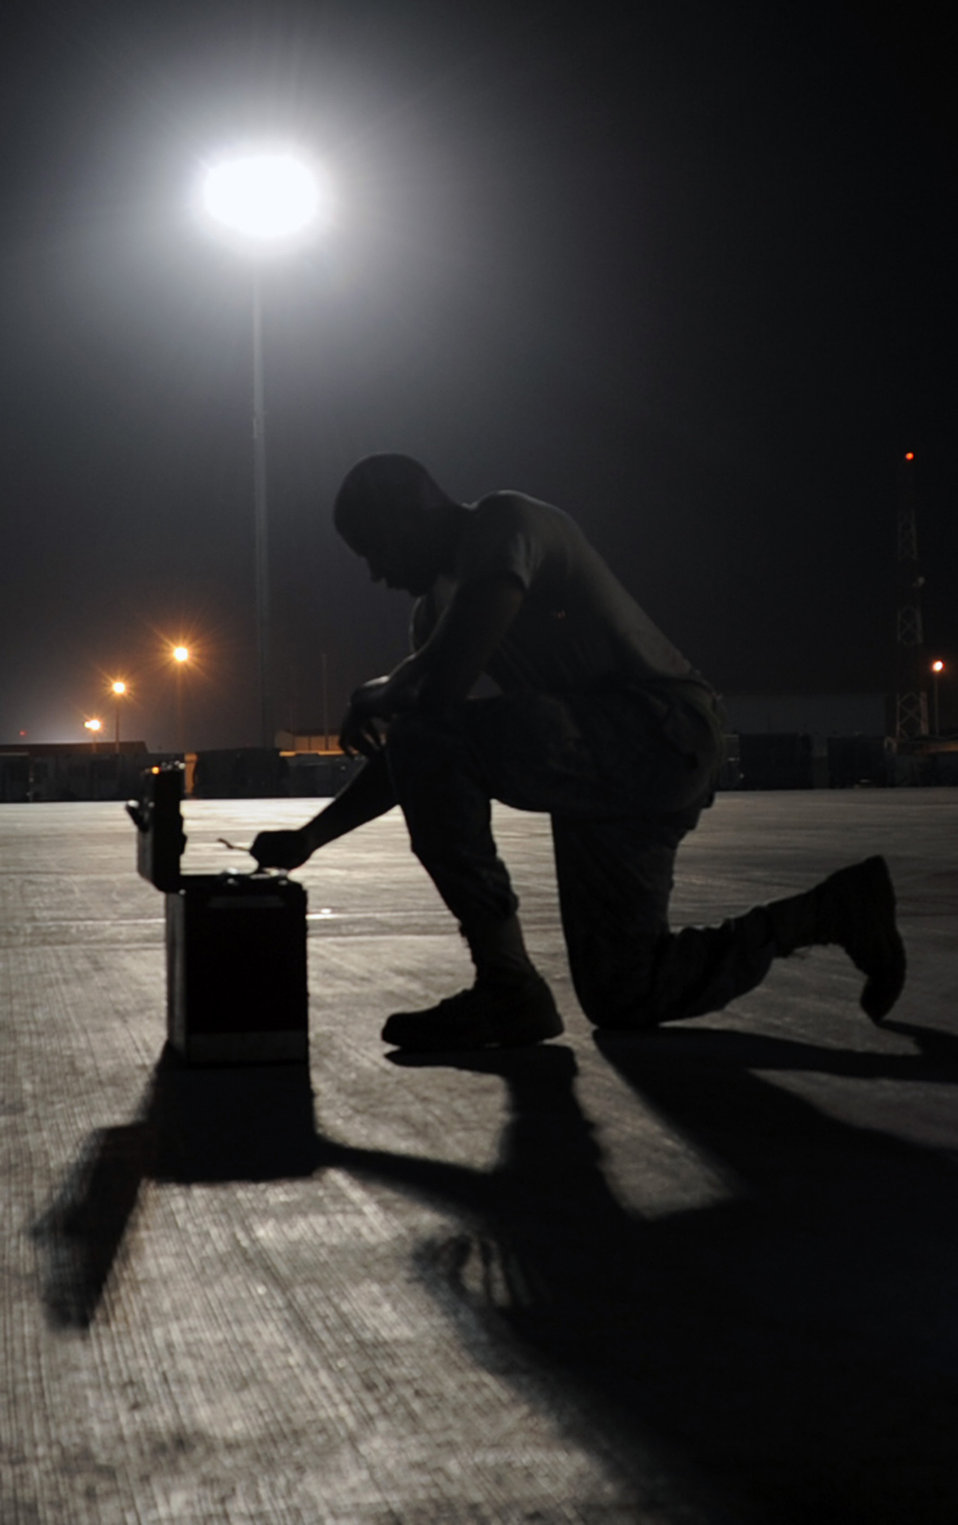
Extending the fight

Senior Airman Justin Lassiter reaches into a toolbox while working on a KC-10 Extender Jan. 31, 2010, at an air base in Southwest Asia. Airman Lassiter is a KC-10 Extender aerospace propulsion journeyman deployed with the 380th Expeditionary Aircraft Maintenance Squadron and fixes and maintains KC-10 engines and systems. He is deployed from the 605th Aircraft Maintenance Squadron at Joint Base McGuire-Dix-Lakehurst, N.J.